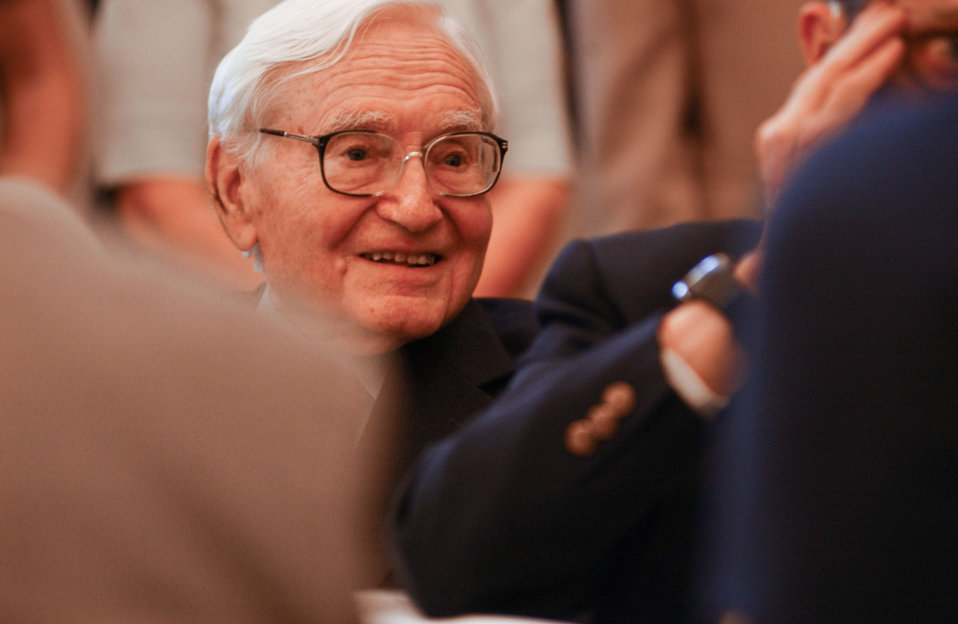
Alvin Weinberg 90th Birthday

05-130 DOE photo by Lynn Freeny
Alvin Weinberg 90th Birthday Celebration at Pollard Auditorium Oak Ridge Tennessee 2005